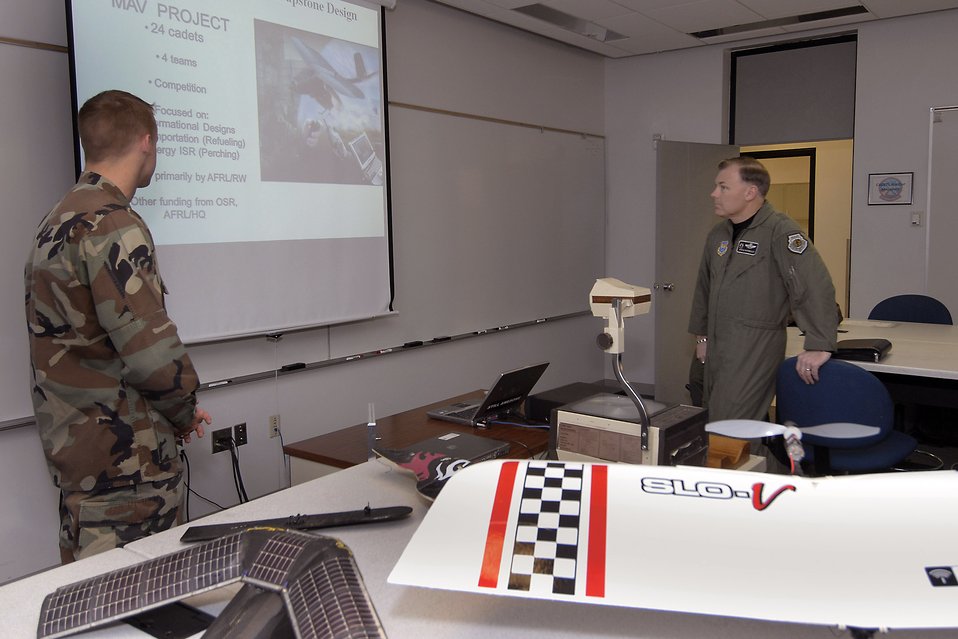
Air Force officials launch new mentoring program

Maj. Gen. Stephen T. Sargeant (right) listens to a U.S. Air Force Academy cadet's captone briefing during a March 17 at the Academy in Colorado Springs, Colo. General Sargeant is the Air Force Operational Test and Evaluation Center commander from Kirtland Air Force Base, N.M.